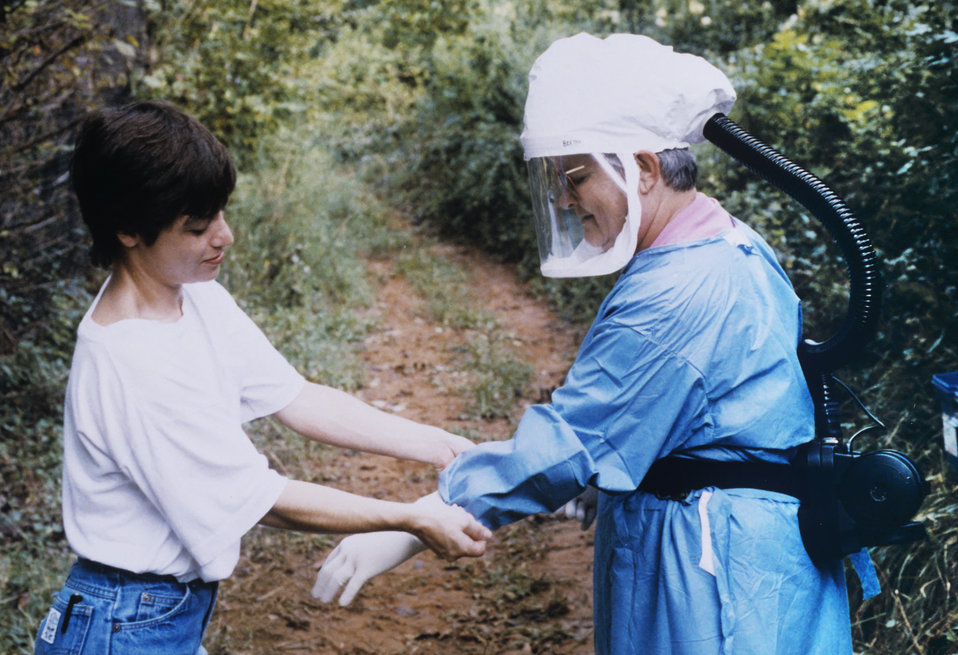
This photograph showed two CDC health officials securing a containment suit before the suited scientist began a Hantavirus field study, which was conducted after the onset of a viral outbreak. In the United States, it is the deer mouse, Peromyscus maniculatus, that is the primary reservoir of the Hantavirus, which causes Hantavirus pulmonary syndrome (HPS).